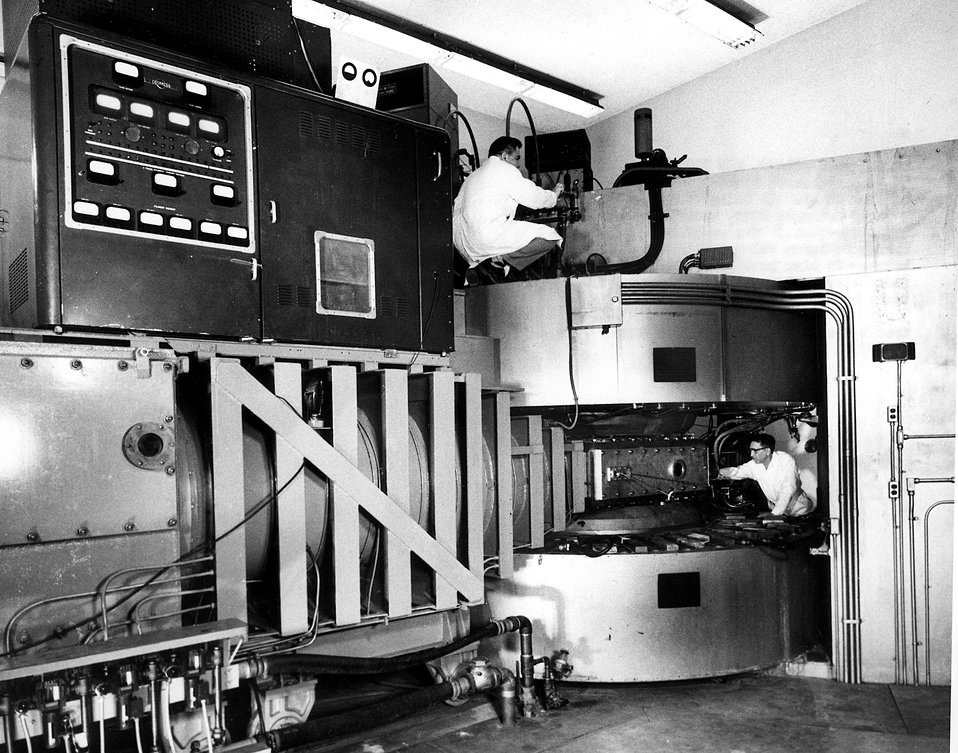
The Brookhaven 60-inch cyclotron accelerates deuterons to 20 million volts.